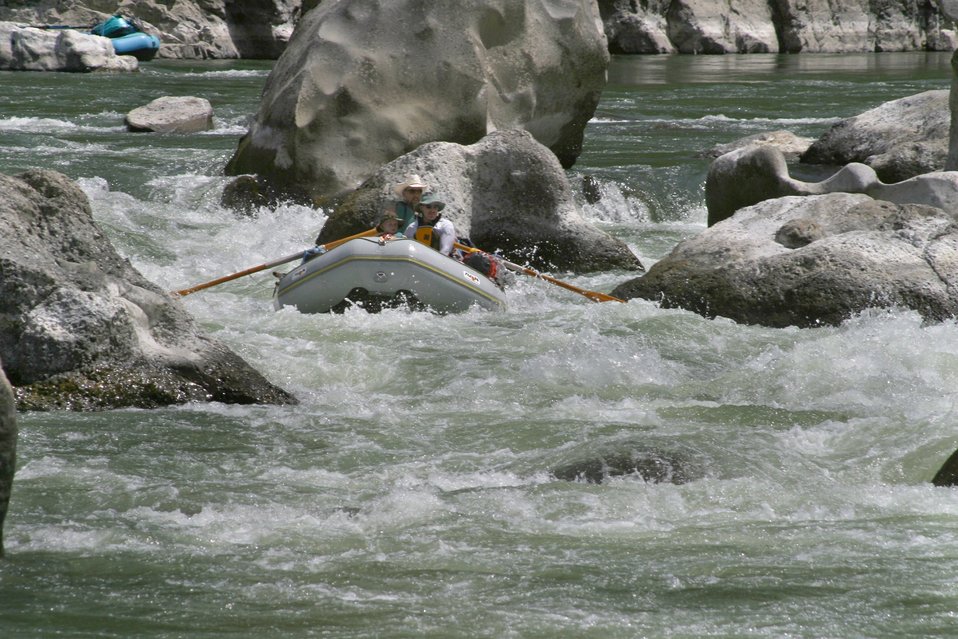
Wild section of the Rogue River from Grave Creek to Foster Bar May 19 to May 22.